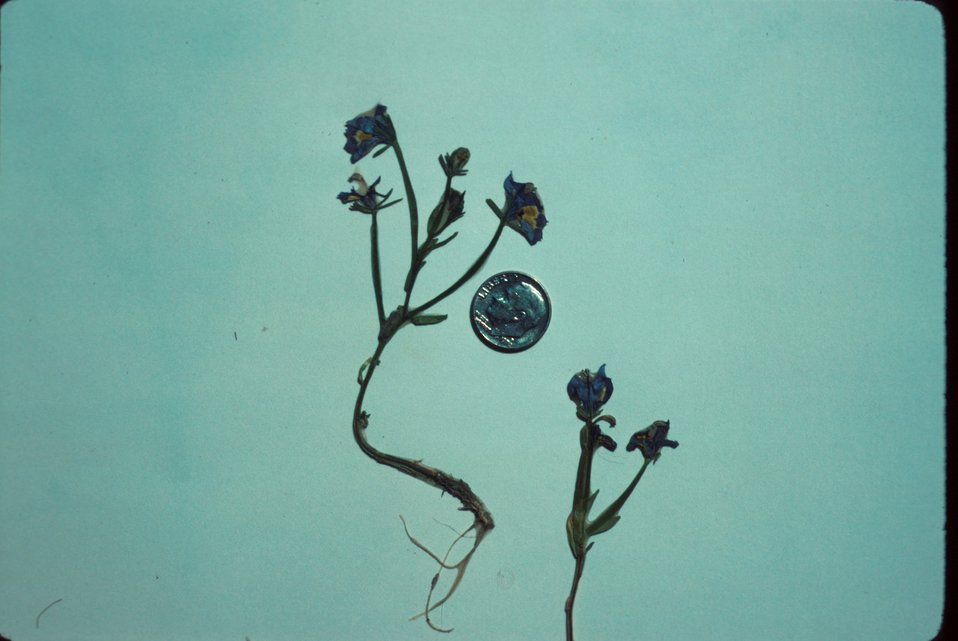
Downingia bacigolupii Wildflower